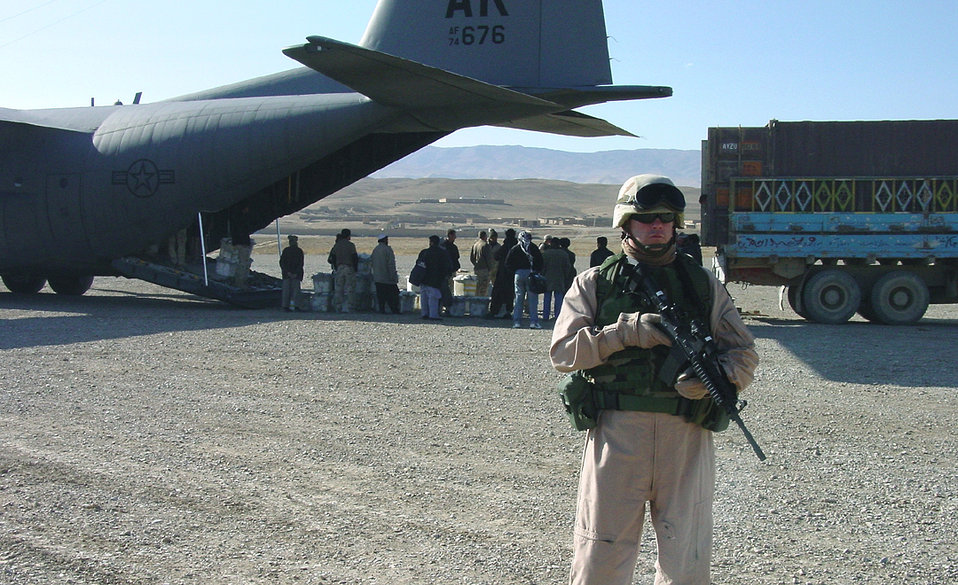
Secured ballots

KARSHI-KHANABAD AIR BASE, Uzbekistan -- Tech. Sgt. Rich Elliot guards a shipment of Afghan election ballots. Airmen and aircraft here are providing logistical support for the elections. Sergeant Elliot is assigned to the 416th Air Expeditionary Group here.